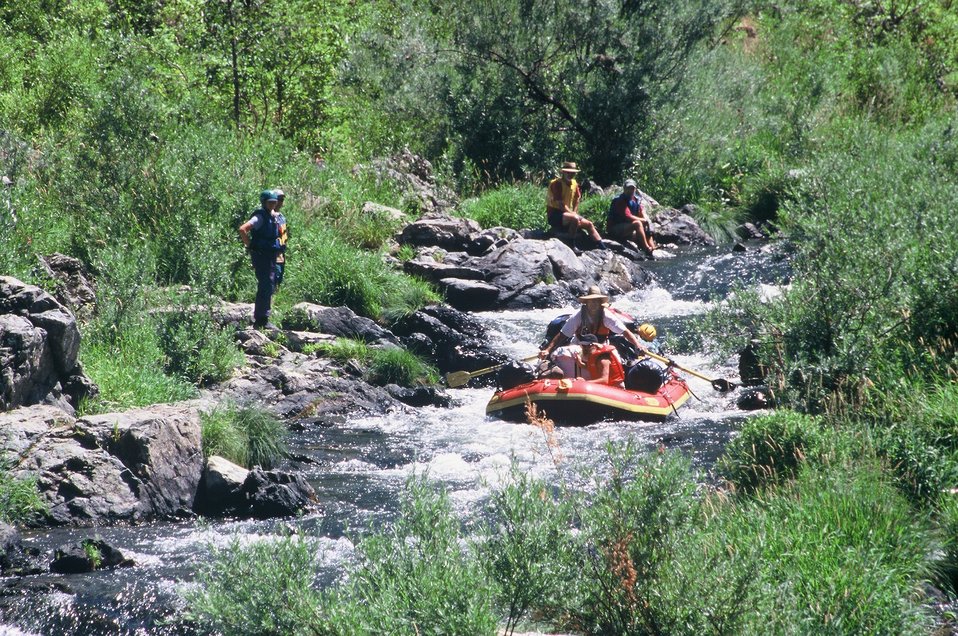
Rainie Falls Fish Ladder